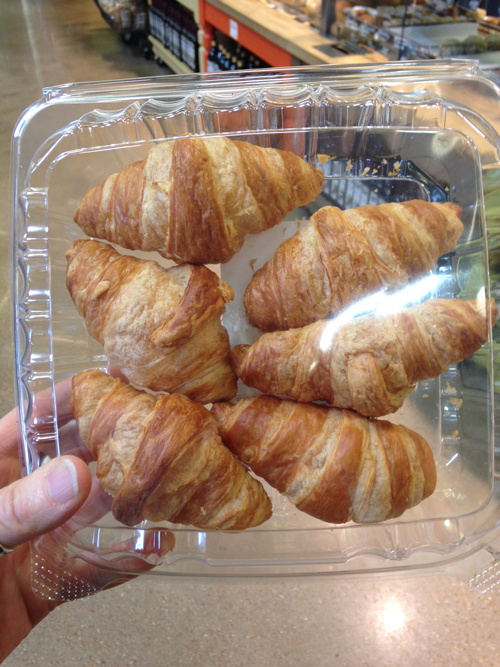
RECALLED – Mini Butter Croissants

April 18, 2014 – Whole Foods Market Southwest Region Recalls Mini Butter Croissants Due to Undeclared Egg.